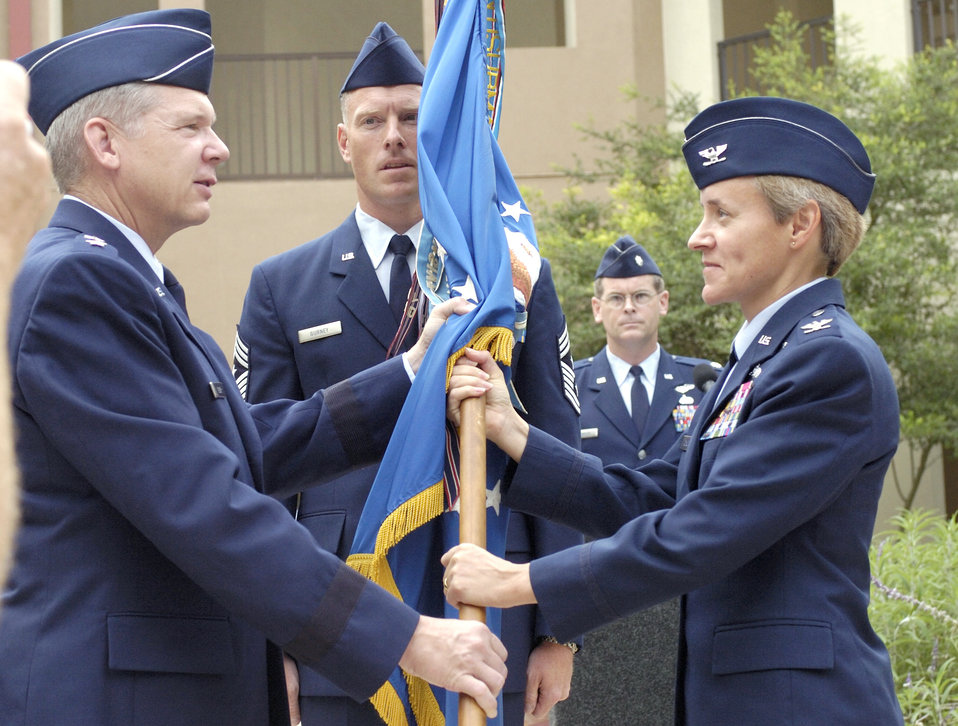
New wing brings Air Force dominance to cyberspace

Lt. Gen. Robert J. Elder presents Col. Kathryn Gauthier with the 67th Network Warfare Wing's guidon during the unit's redesignation ceremony at Lackland Air Force Base, Texas, on Friday, July 7. General Elder is 8th Air Force and Air Force Network Operations commander.